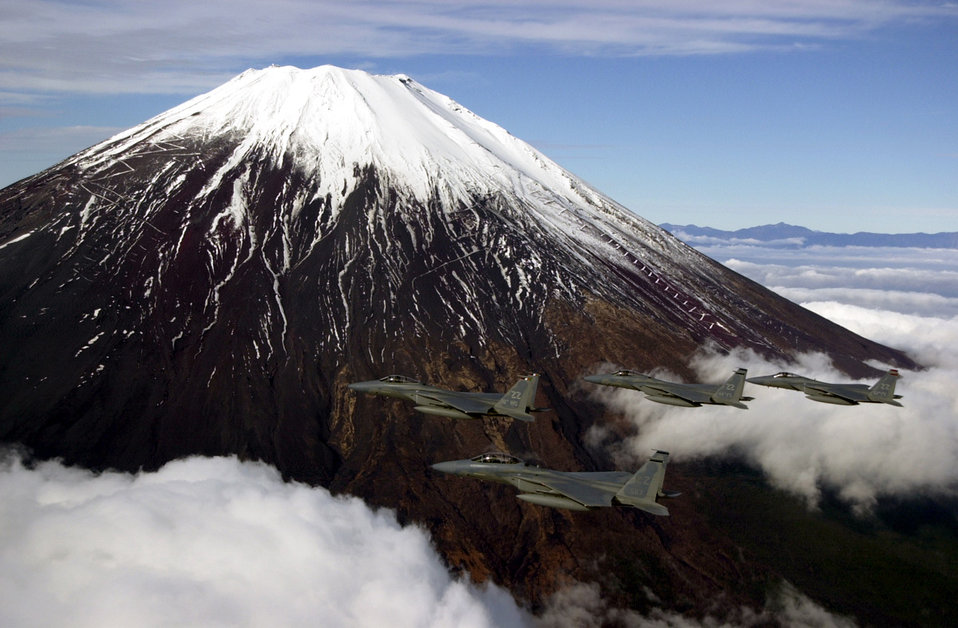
Mount Fuji fly by

FILE PHOTO -- Three F-15C and one F-15D aircraft fly next to Mt. Fuji.